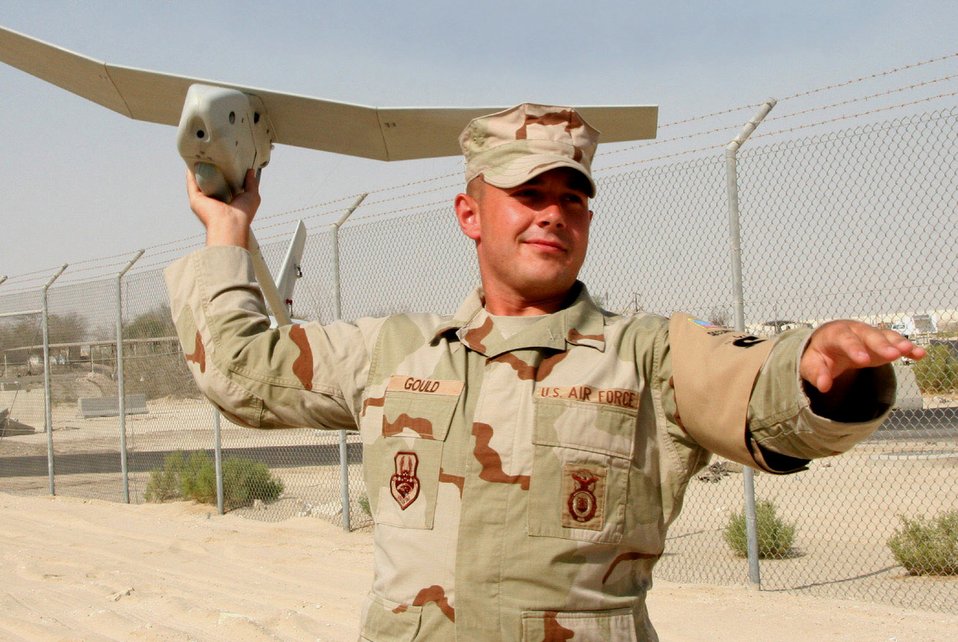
Raven B has landed in Southwest Asia

Airman 1st Class James Gould demonstrates how the Raven B is hand-launched for missions. Airman Gould is a certified Raven B operator from the 380th Expeditionary Security Forces Squadron in Southwest Asia.